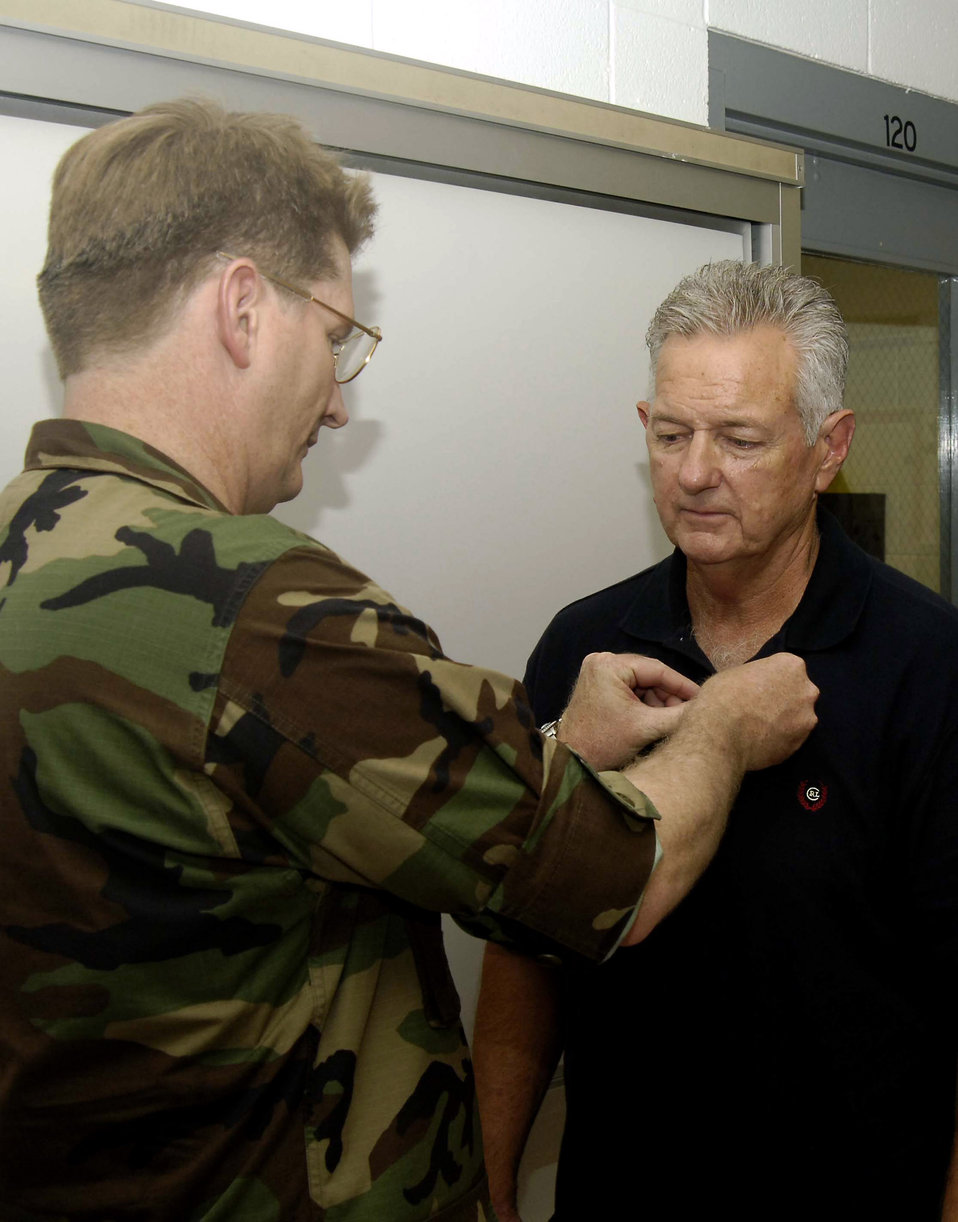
Crew chief awarded Purple Heart after 39-year wait

Col. Robert Thomas, 6th Air Mobility Wing commander, pins the Purple Heart on Vietnam veteran Wayne Sufficool, Aug. 9, at MacDill Air Force Base, Fla. Mr. Sufficool was awarded the decoration for wounds he suffered while stationed in Tan Son Nhut Air Base, Republic of Vietnam, in February 1968.